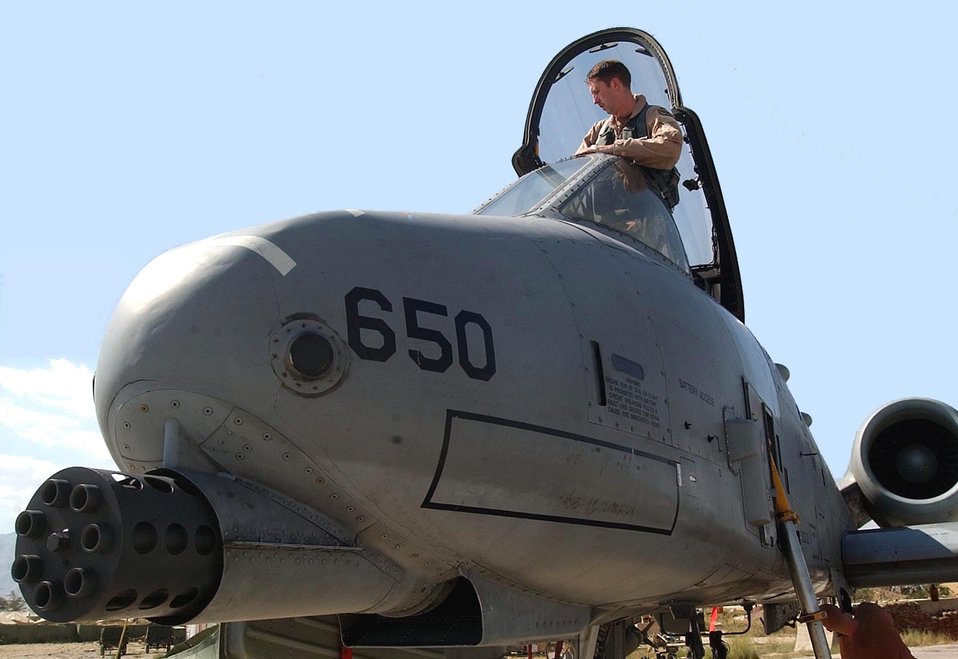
Notch one for Axt

BAGRAM AIR BASE, Afghanistan -- First Lt. Erik Axt, 81st Expeditionary Fighter Squadron, emerges from his A-10 Thunderbolt II after flying a mission here Aug. 14 supporting Operation Enduring Freedom.